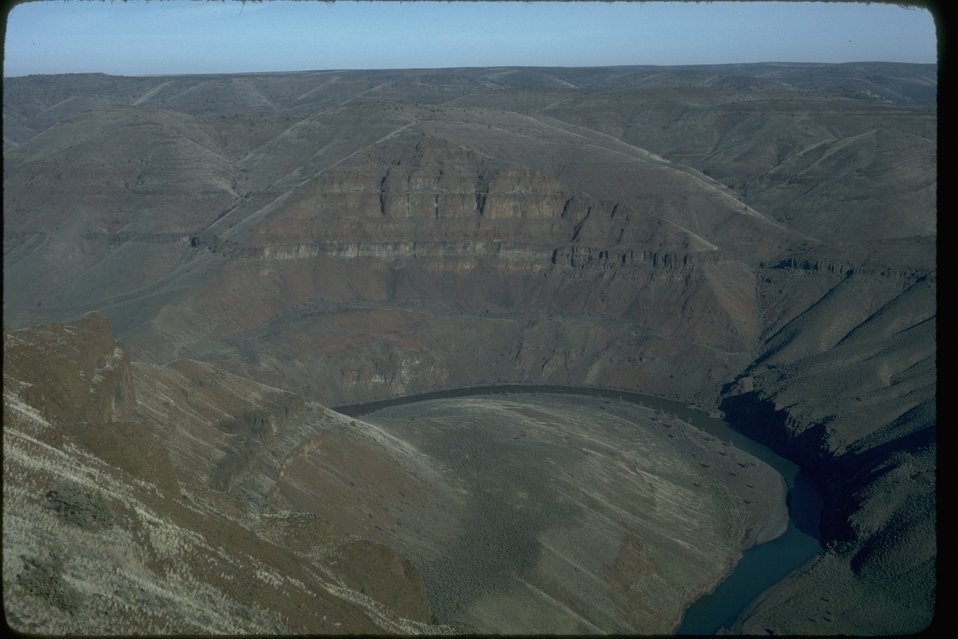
Aerial of Lower John Day looking Northeast at Jacknite. OR 5-6